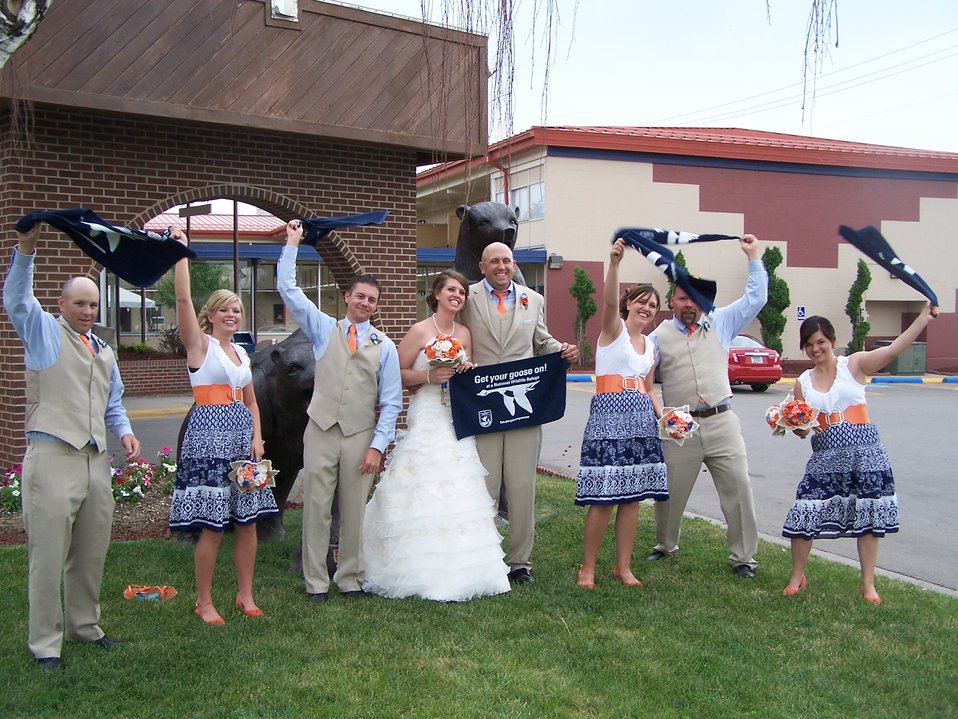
Get Your Goose On! - Holy Matrimony Style

Bowdoin National Wildlife Refuge's Fire Management Specialist Jim and his bride, Katie Forsythe, Get Their Goose On with their wedding party.